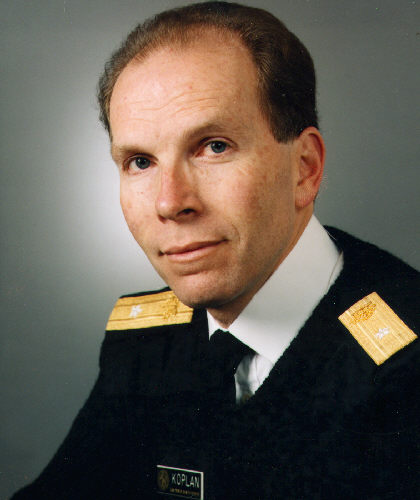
Jeffrey P. Koplan, M.D., M.P.H., Director, CDC.